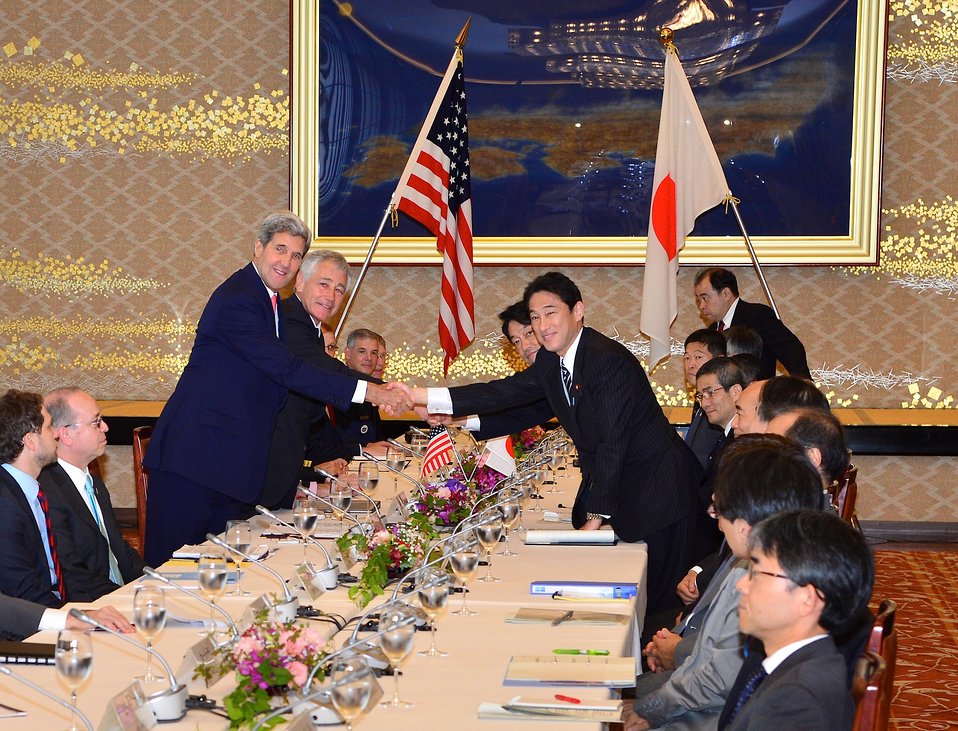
U.S.-Japan Security Consultative (2 2) Meeting in Tokyo

U.S. Secretary of State John Kerry and U.S. Secretary of Defense Chuck Hagel shake hands with their Japanese counterparts, Foreign Minister Fumio Kishida and Defense Minister Itsunori Onodera, at the Iikura Guest House in Tokyo on October 3, 2013.